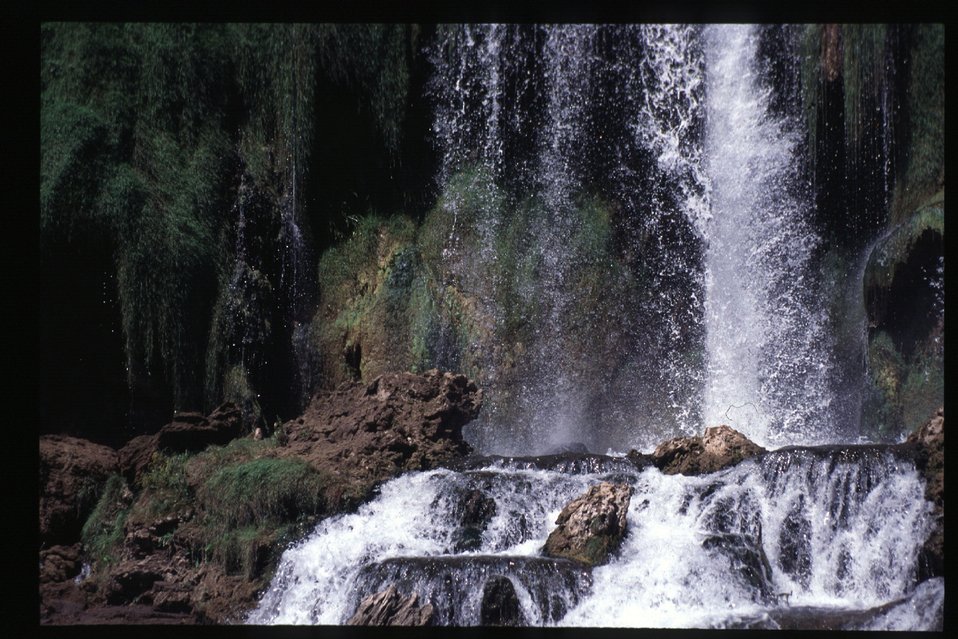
Scenic waterfall Fall Creek Falls Snake River Canyon USRD Upper Snake River District